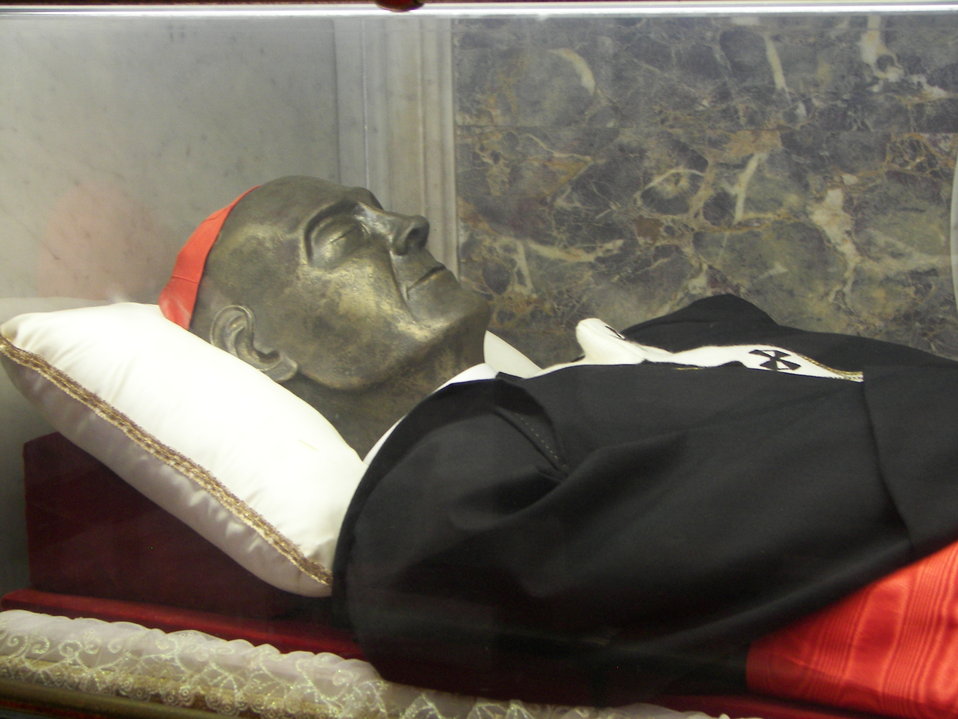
Italiano: Corpo del Beato Dusmet all'interno della cattedrale di Catania.